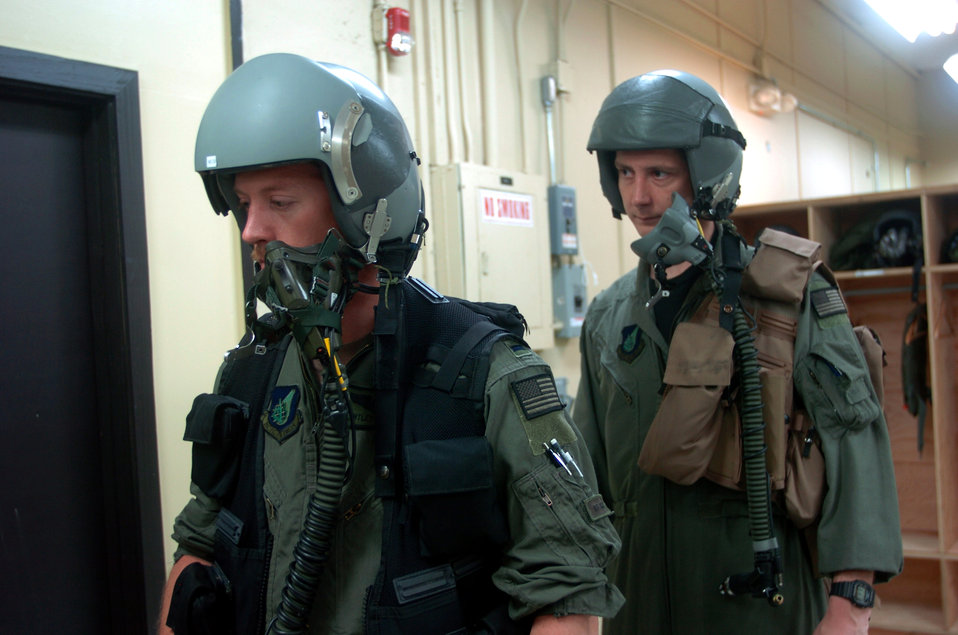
Masked up

ANDERSEN AIR FORCE BASE, Guam -- Capt. Robby Castle (right), a radar navigator, and 1st Lt. Bentley Brooks, a pilot, wait to have their oxygen mask tested prior to a mission here. Six B-52 Stratofortresses and about 300 support people from Minot Air Force Base, N.D., are the first to deploy here following the decision to station a rotating bomber force here. Both Airmen are from the 23rd Bomb Squadron at Minot AFB.